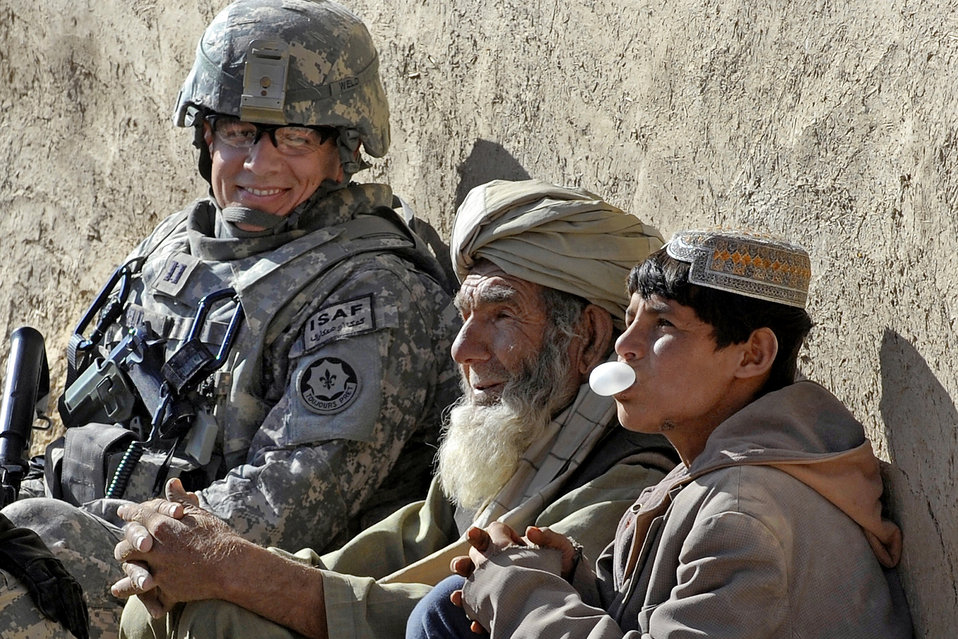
Pop the question

Capt. Ryan Weld talks with villagers during a wroowali, or brotherhood, mission to Bakorzai village, Afghanistan, Dec. 22, 2010. Captain Weld, an intelligence officer, is assigned to Provincial Reconstruction Team Zabul. These missions are designed to bring the Afghan people closer to their government.